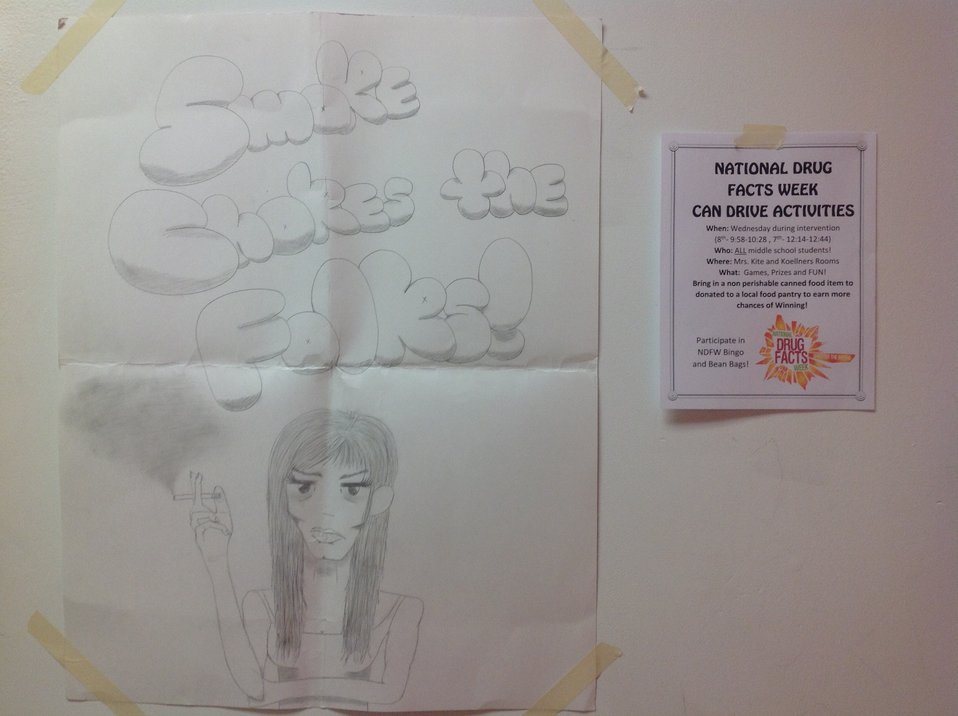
I'm Shattering the Myths Because...

Teenagers from the Van Buren County SAFE Coalition's, Youth Leadership Council (YLC) in Keosauqua, Iowa participate in various events during National Drug Facts Week, 2014.